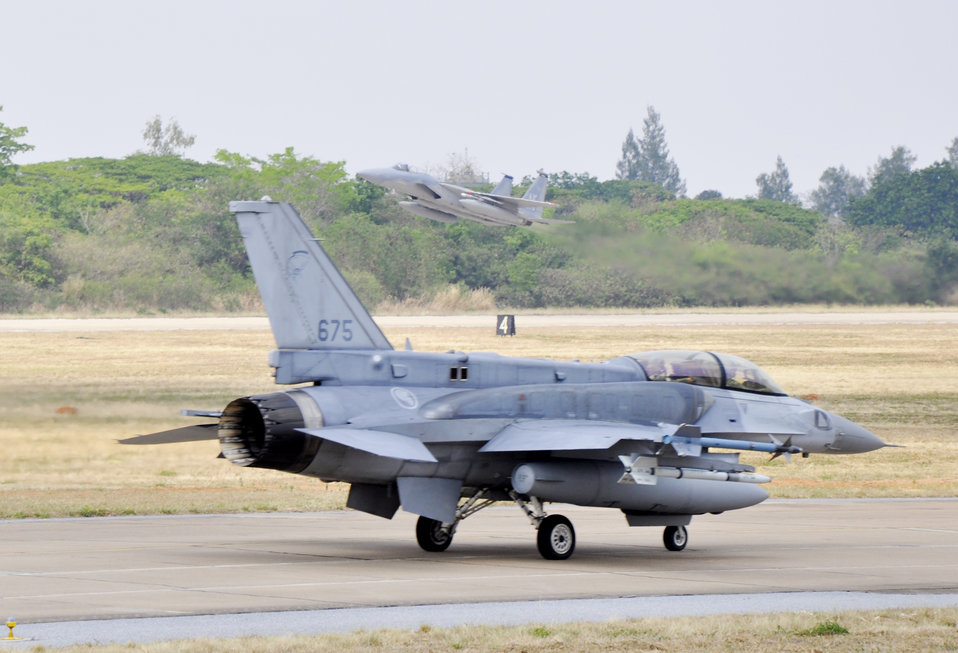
Cope Tiger 2010